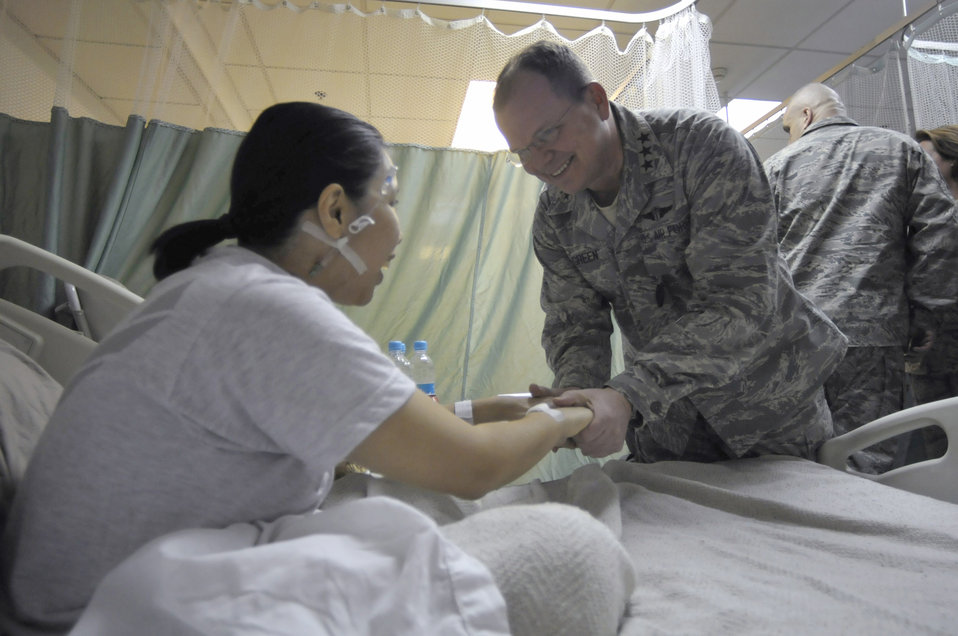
Surgeons general visit Bagram

Air Force Surgeon General Lt. Gen. (Dr.) Charles B. Green visits Senior Airman Diane Bautista Feb. 13, 2011, during a visit to the Craig Joint Theater Hospital at Bagram Airfield, Afghanistan. Airman Bautista is a medic assigned to the 455th Expeditionary Medical Group.